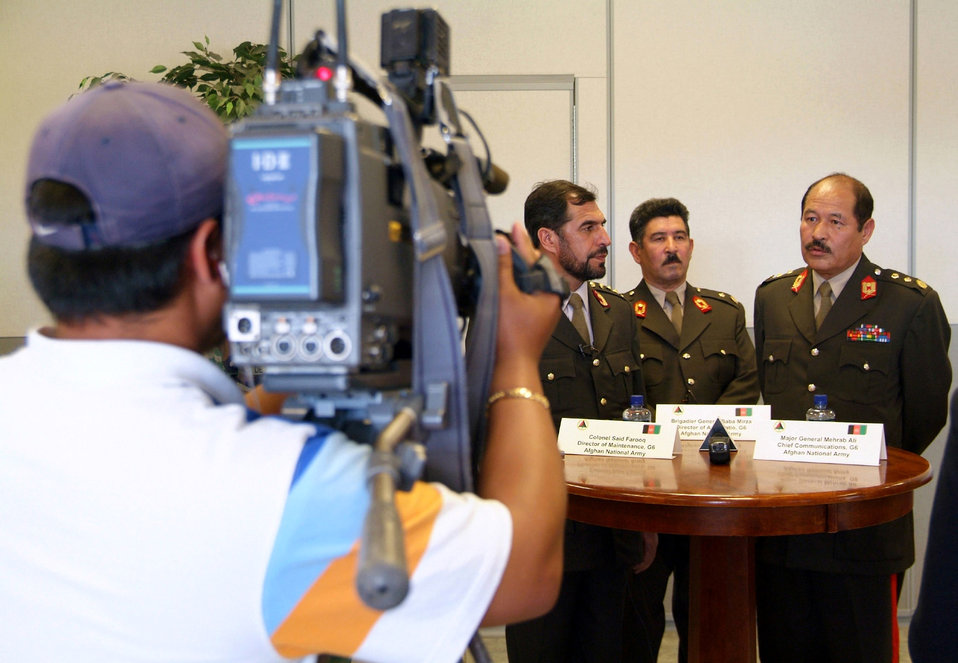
Afghan generals visit Air Force training facilities

From left, Col. Said Farooq Yosuf Zai, Brig. Gen. Baba Mirza and Maj. Gen. Mehrab Ali field questions from local area media representatives March 16 at Keesler Air Force Base, Miss. The officers are members of the Afghan National Army.